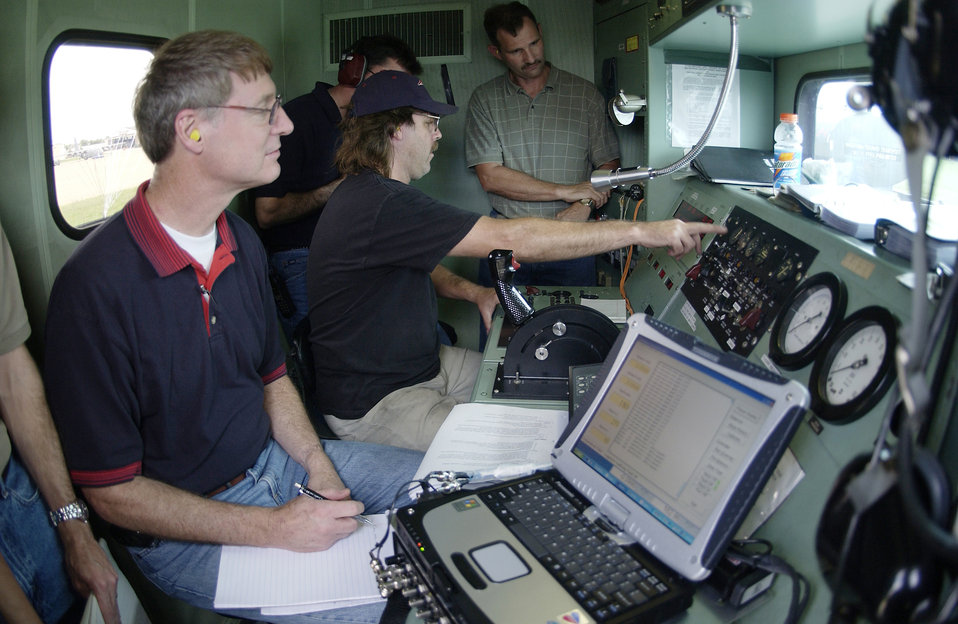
Warfare center creates mobility warriors

The mobility weapons school's 57th Weapons Squadron conducts C-17 countermeasure training at Biggs Army Air Field, Texas, in November 2005.